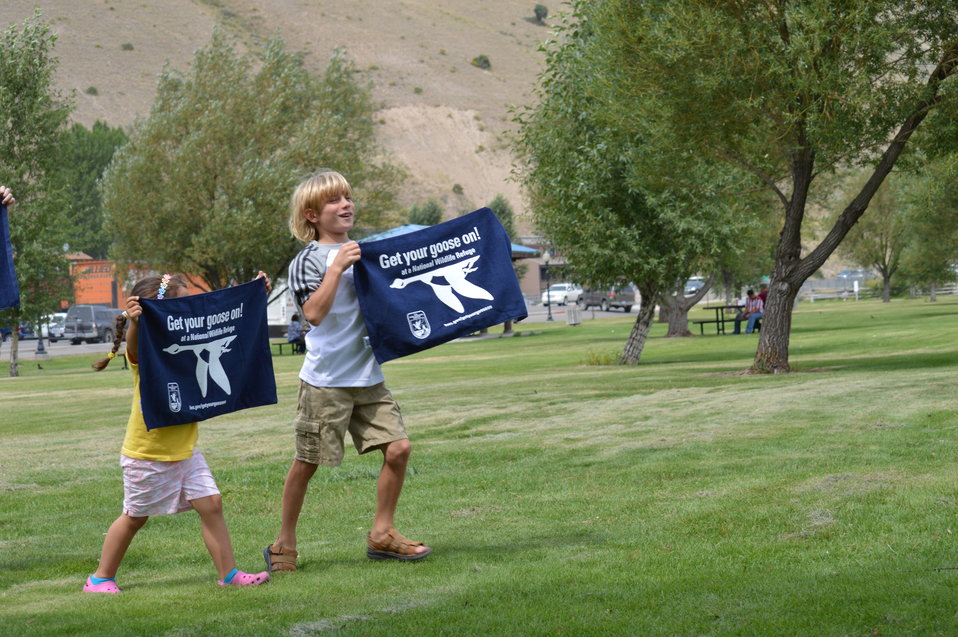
Get Your Goose On! - National Elk Refuge Style

On August 10, 2012 the U.S. Fish and Wildlife Service and Partners celebrated the 100 year anniversary of the establishment of the National Elk Refuge. In these photos, young attendees, along with Puddles the Blue Goose and the National Elk Refuge's mascot, showed us how to Get Your Goose On! with style.